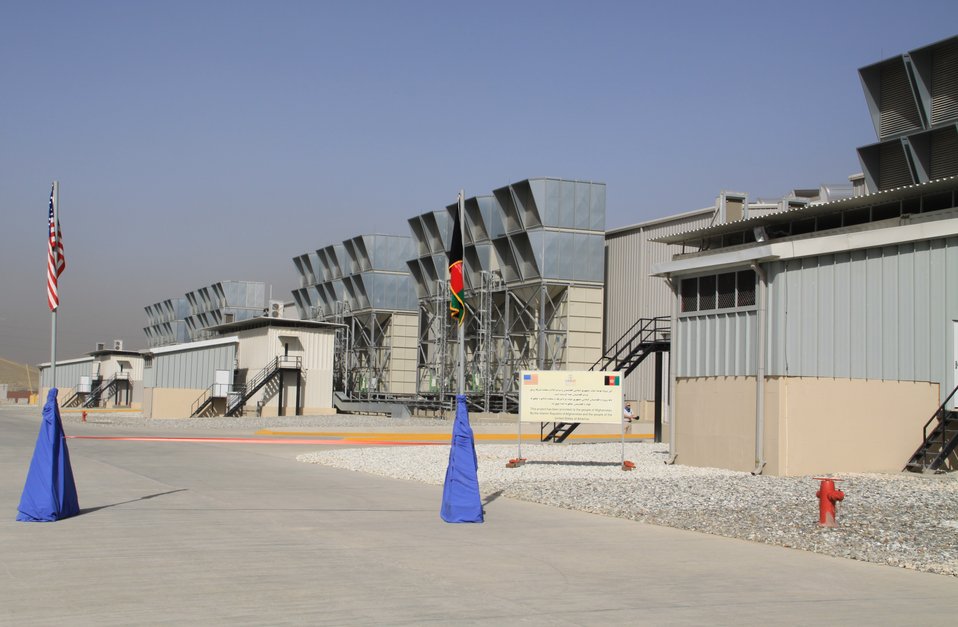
105 MW Tarakhil Power Plant Handover